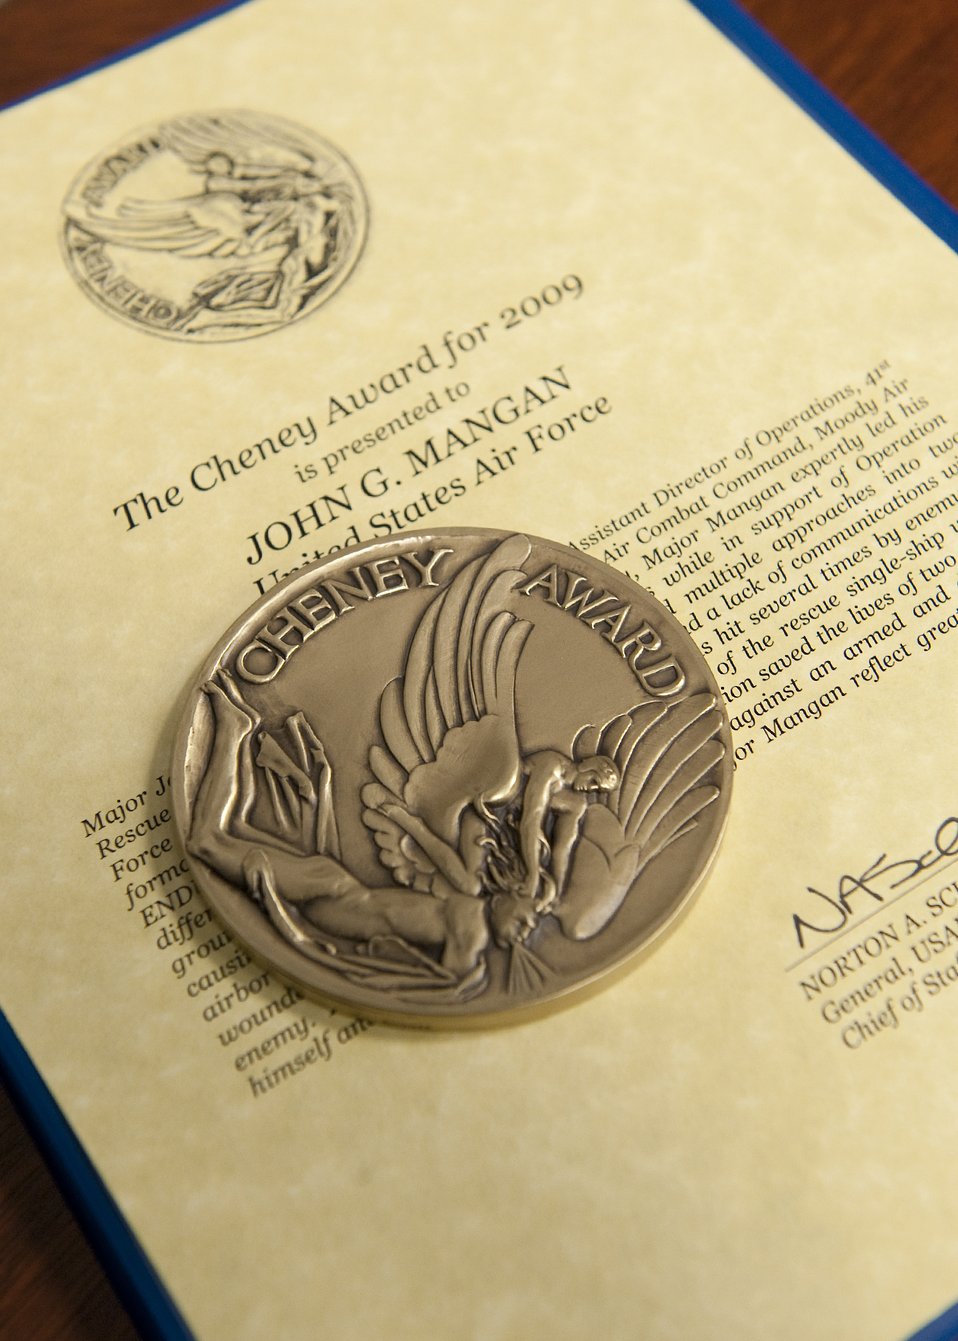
Helicopter pilot receives Cheney Award

Maj. John Mangan was named the recipient of the Cheney Award in a ceremony Oct. 15, 2010, at the Pentagon. Major Mangan received the award for his actions as the pilot of an HH-60 Pave Hawk on a rescue mission in the Helmland Valley of Afghanistan in 2009 while supporting Operation Enduring Freedom. Without ground communications or airborne support, Major Mangan managed to land and save the lives of two critically injured Marines under intense enemy fire. The Cheney Award is presented each year to aviators who demonstrate an act of valor, extreme fortitude or self-sacrifice in a humanitarian venture. Established in 1927, the award is in memory of 1st Lt. William Cheney, who was killed in an air collision over Italy in 1918.